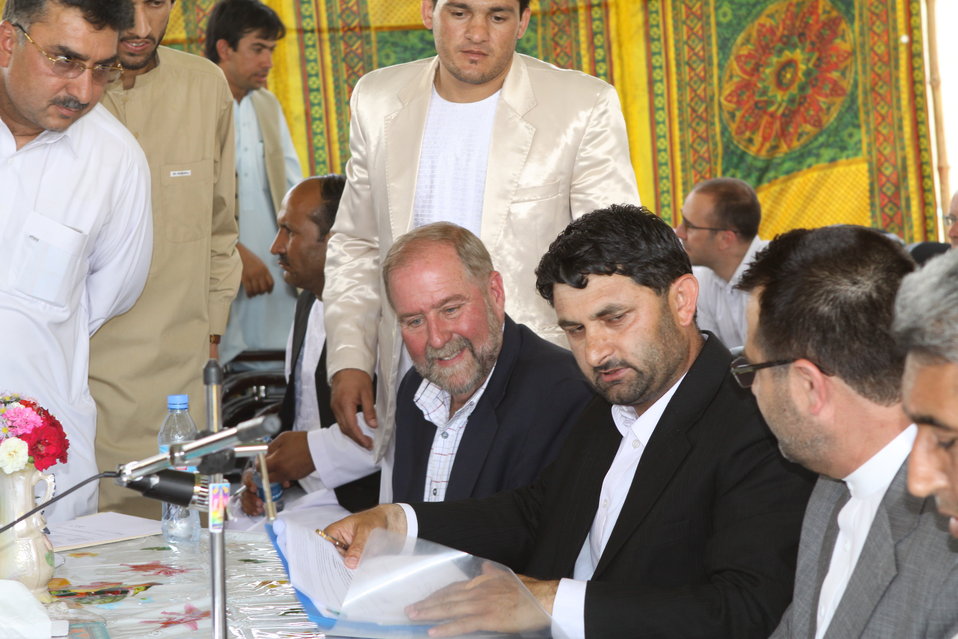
Bolan Poultry Farm